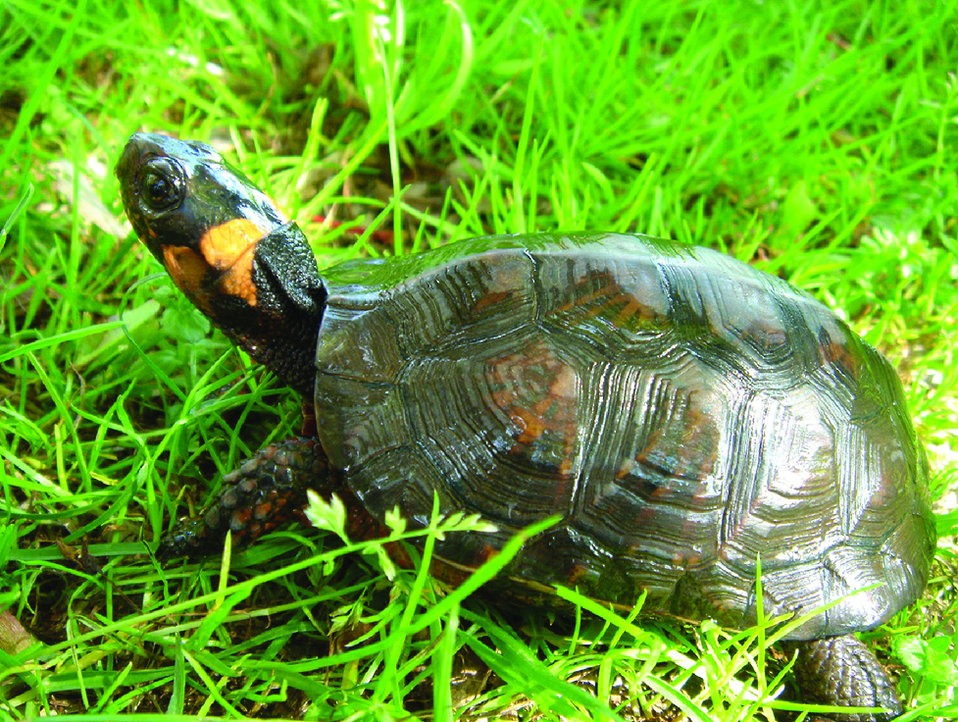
Bog turtle

Bog turtles are darkly colored with a
bright yellow, orange or red blotch on
each side of the head.